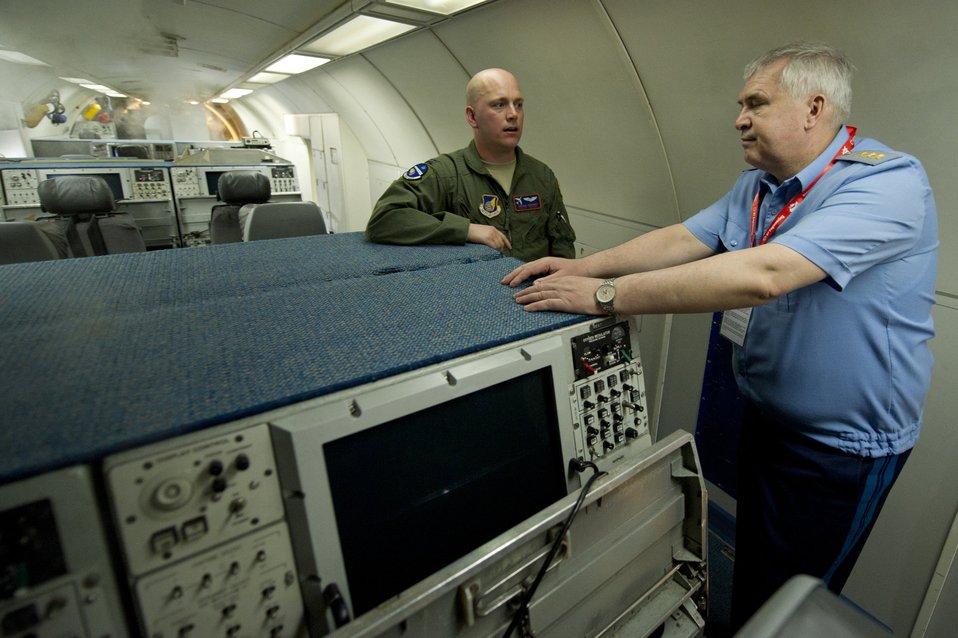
U.S., Russian airmen meet during Singapore Airshow 2012

U.S. Air Force Capt. Joshua Craymer, an E-3 Sentry aircraft commander pilot, gives a tour of the Sentry to Commander-in-Chief of the Russian Air Force Col. Gen. Alexander Zelin at the 2012 Singapore Airshow on Feb. 15, 2012, in Changi, Singapore. Since the end of the Cold War, Zelin has also had the opportunity to visit the U.S. and fly in an F-16 Fighting Falcon and F-15E Strike Eagle.